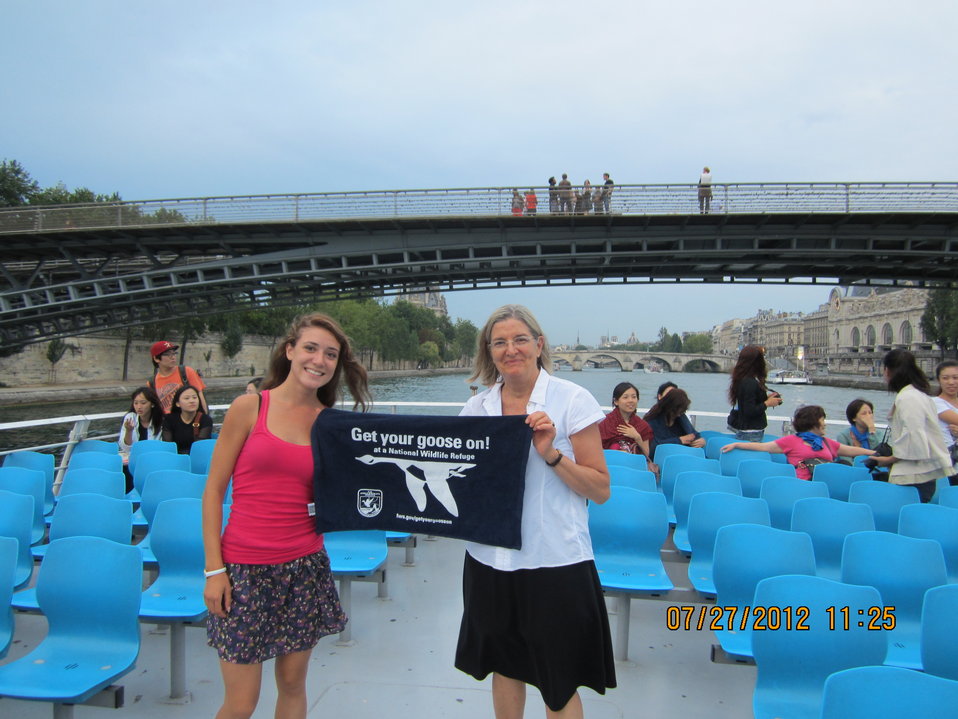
Get Your Goose On! in France